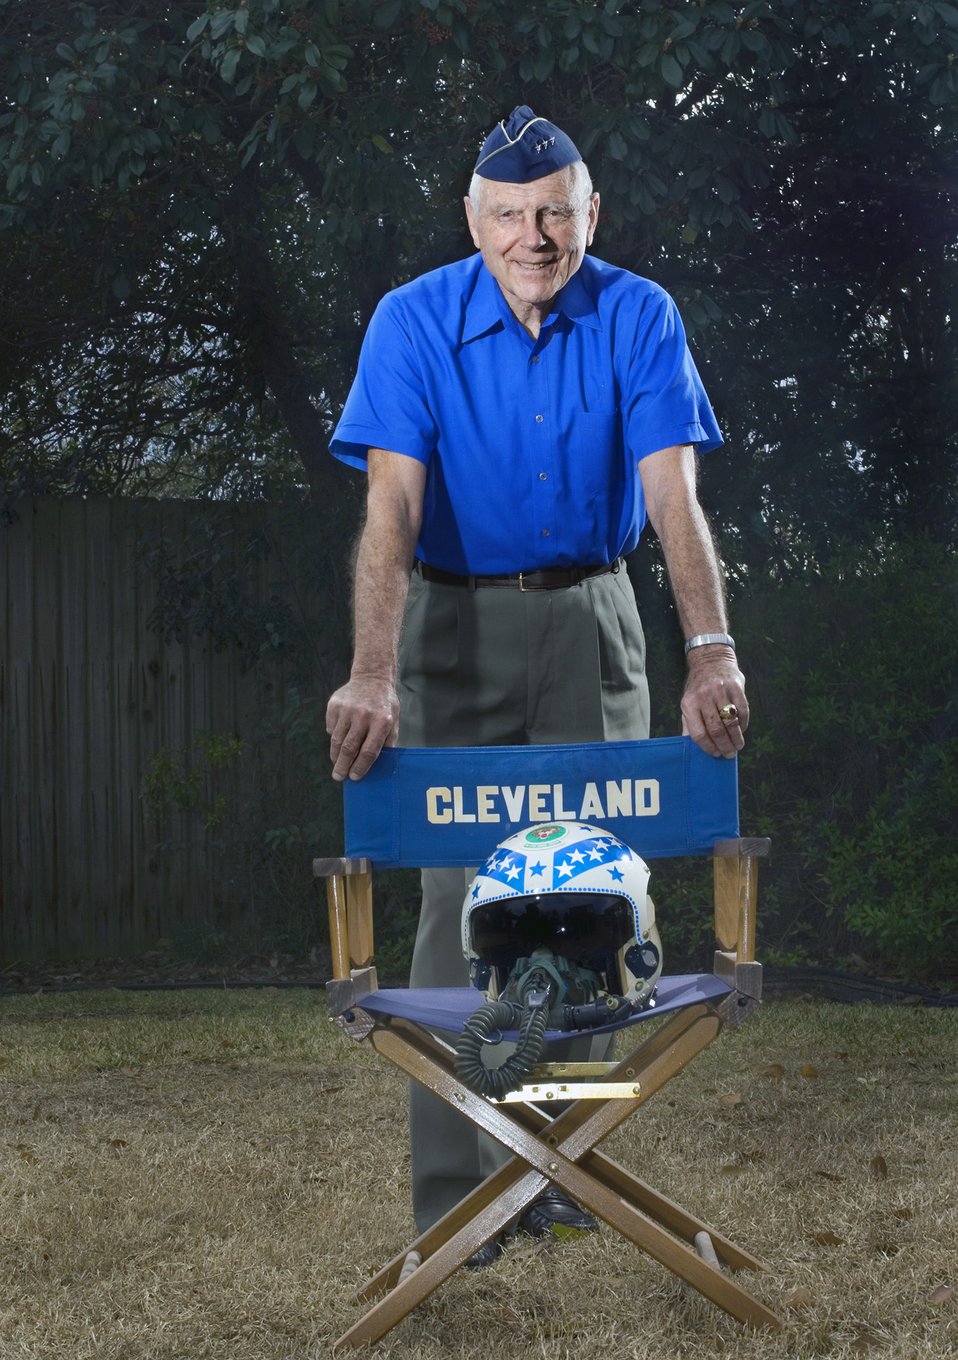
Retired general becomes Air Force's newest fighter ace

Retired Lt. Gen. Charles G. Cleveland stands in his backyard behind a director's chair presented to him as a gift for his time as the commander of the Air University at Maxwell Air Force Base, Ala. General Cleveland has been recognized by the Air Force as a jet fighter ace 55 years after the end of the Korean War. Newly discovered documentation by the Russian air force as well as eyewitness accounts by General Cleveland's wingmen proved evidence to support converting two probable kills into confirmed kills from dog fights over